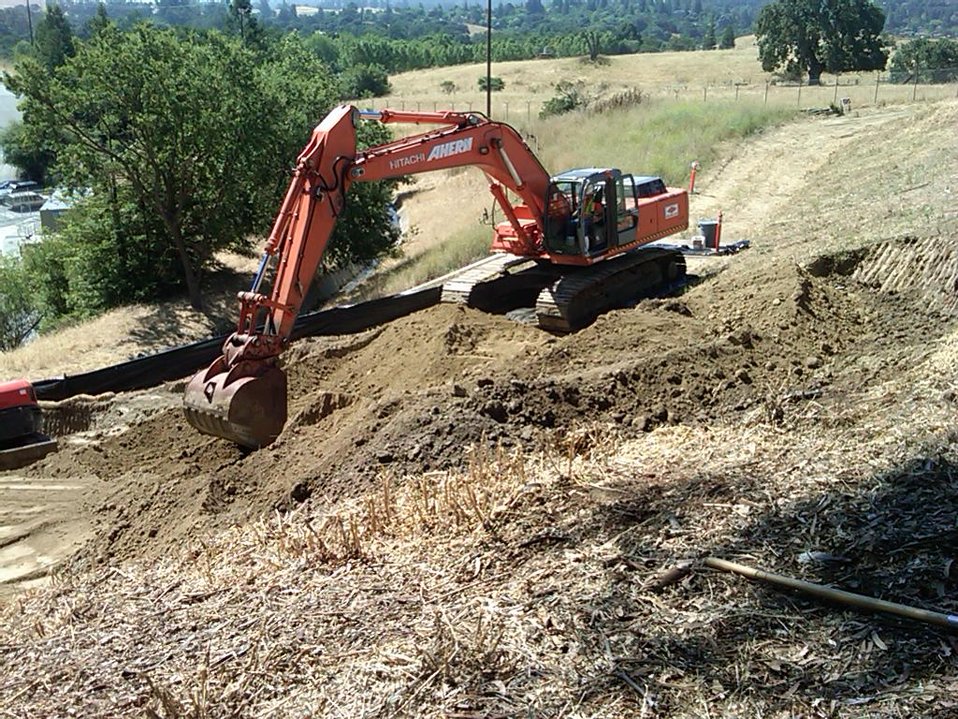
Recovery Act Supports Soil and Debris Cleanup, Groundwater Treatment at SLAC

Recovery Act workers are on track to remove more than 30,000 cubic yards of contaminated soil and debris at the SLAC National Accelerator Laboratory by September 2011.
The Recovery Act invested $14.3 million in legacy cleanup activities at SLAC. In addition to removing contaminated soil and debris that is shipped to local disposal facilities, Recovery Act workers installed three new groundwater treatment systems.